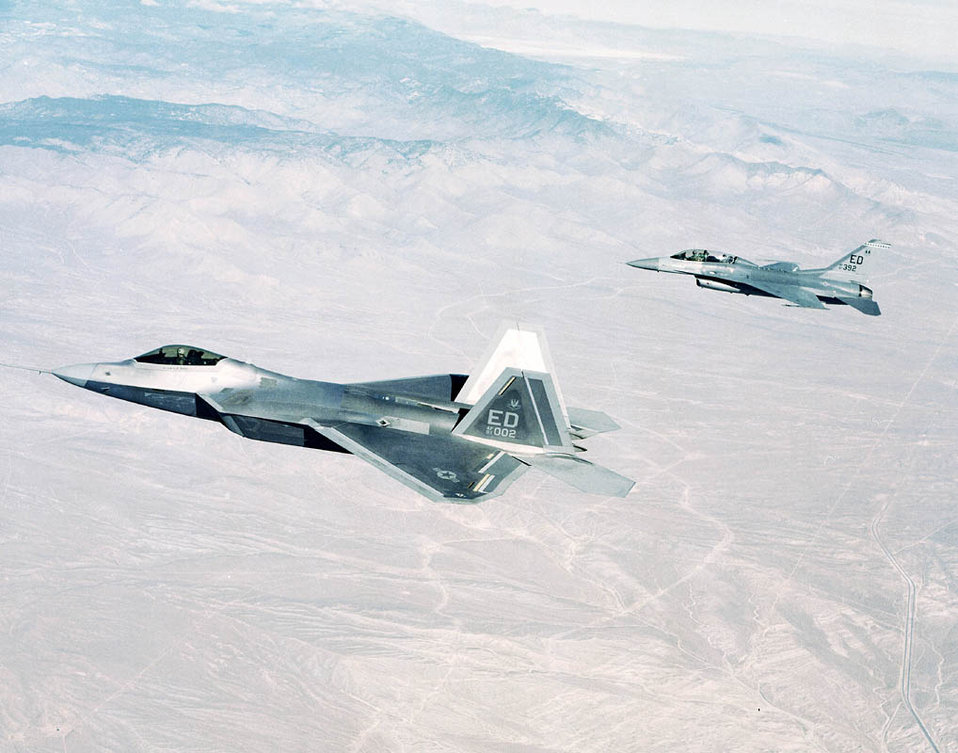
F/A-22 Raptor 4002

FILE PHOTO -- F/A-22 Raptor 4002 flies a test mission alongside an F-16 chase aircraft and reaches the 183 hour flight test milestone. The Raptor is the most advanced fighter aircraft in the world, combining a revolutionary leap in technology and capability with reduced support requirements and maintenance costs. The F/A-22's combination of stealth, integrated avionics, maneuverability, and supercruise supersonic flight without afterburner will give Raptor pilots a first-look, first-shot, first-kill capability against the aircraft of any potential enemy. The Raptor is designed to provide not only air superiority, but air dominance, winning quickly and decisively with few U.S. and allied casualties. The Raptor also has an inherent air-to-ground capability.